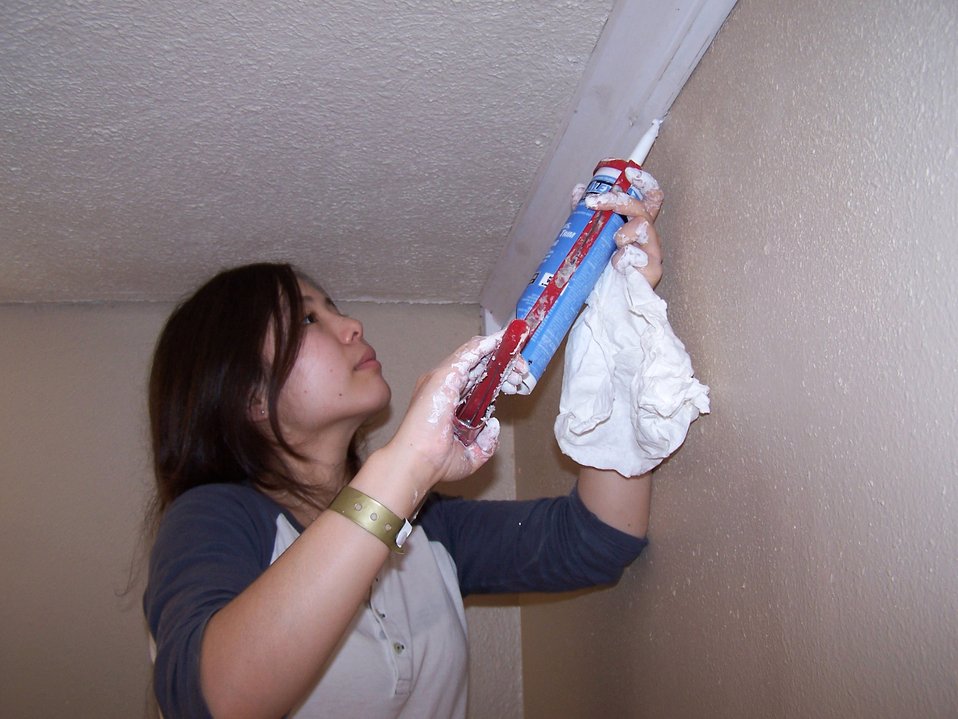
Airmen help pick up the pieces for those in need

Senior Airman Thy Hoang applies caulking to wood trim in a home being restored in Bay St. Louis, Miss. The home was damaged by Hurricane Katrina more than a year ago. Airman Hoang is a 354th Medical Support Squadron pharmacy technician from Eielson Air Force Base, Alaska. She was one of five Airmen who travelled from Eielson AFB to the Gulf coast to repair Hurricane Katrina-damaged homes.